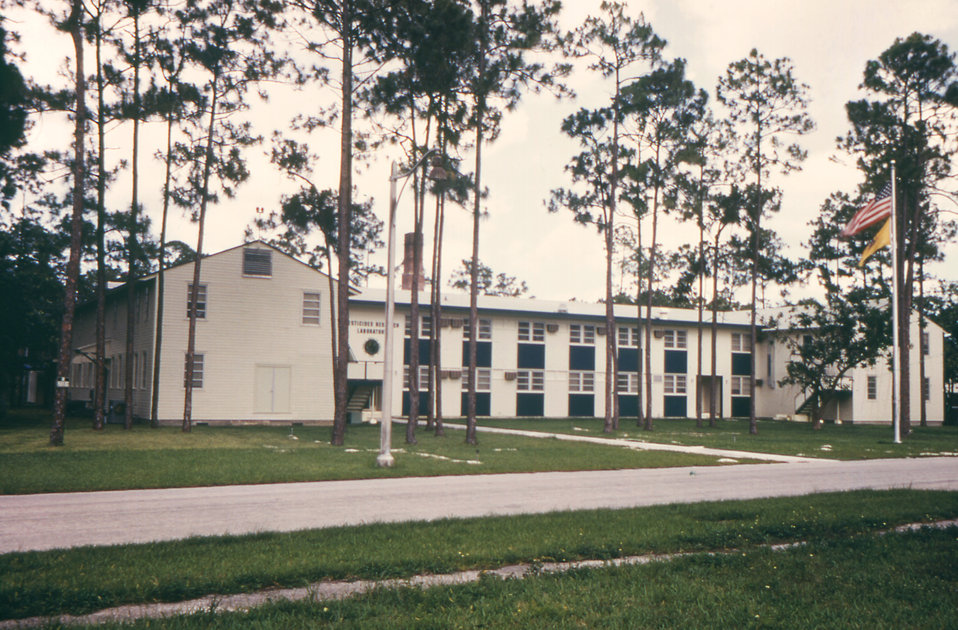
This 1968 image depicts what was an exterior of a Centers for Disease Control (CDC) pesticide testing facility, which was located in Thomasville, Georgia.